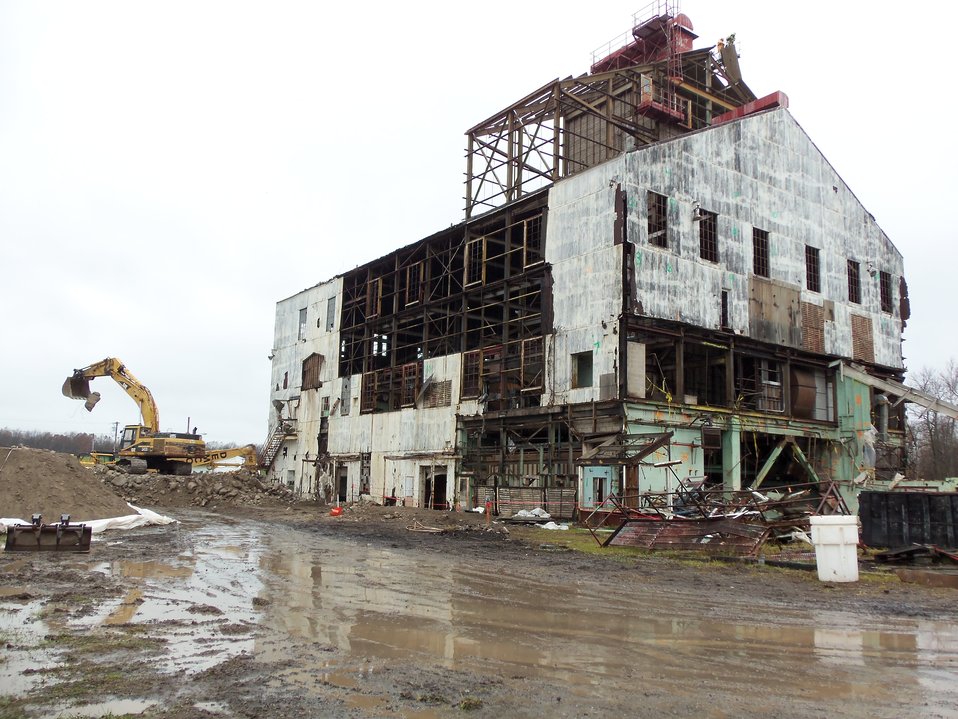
DECONSTRUCTION SIDING HALF REMOVED.

Activities from the Niagara Falls Storage Site, which is associated with the former Lake Ontario Ordnance Works. Formerly Utilized Sites Remedial Action Program (FUSRAP), a program initiated in 1974 to identify, investigate and clean up or control sites that were part of the Nation's early atomic energy and weapons program. Activities at the sites that are eligible for FUSRAP were conducted by Manhattan Engineer District (MED) or the Atomic Energy Commission (AEC), both predecessors of the Department of Energy (DOE). The U.S. Army Corps of Engineers was assigned management of FUSRAP by Congress in 1997.